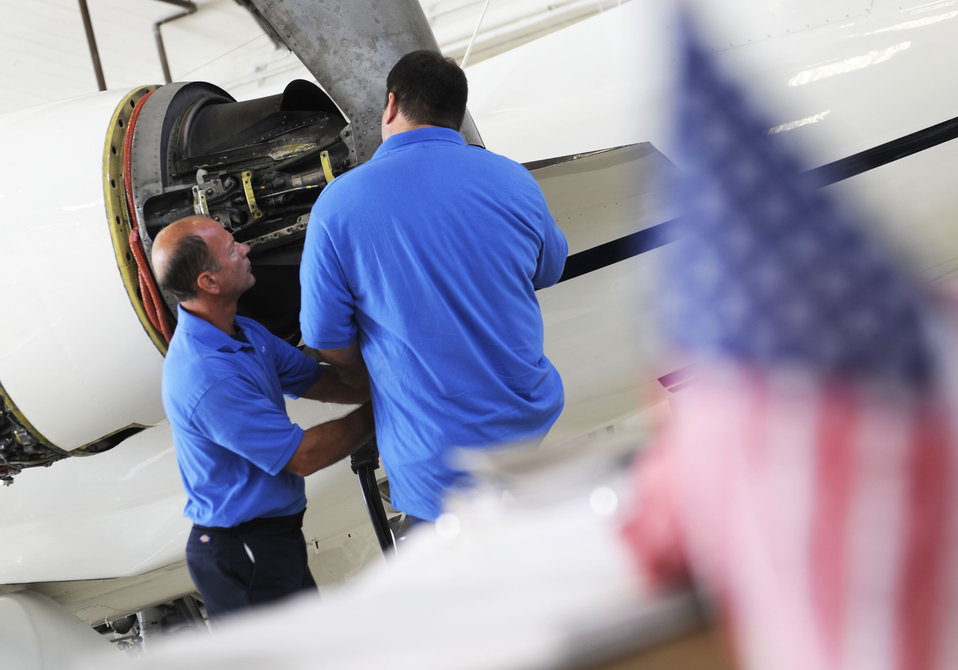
C-21 phase inspection

Bob Norrenberns (left) and Eric Bollinger work on a C-21 during a phase inspection Sept. 16, 2010, at Scott Air Force Base, Ill. The phase inspections are done on aircraft after they reach flying milestones to ensure the aircraft remain in top condition. Mr. Bollinger and Mr. Norrenberns are contractors with DynCorp International.